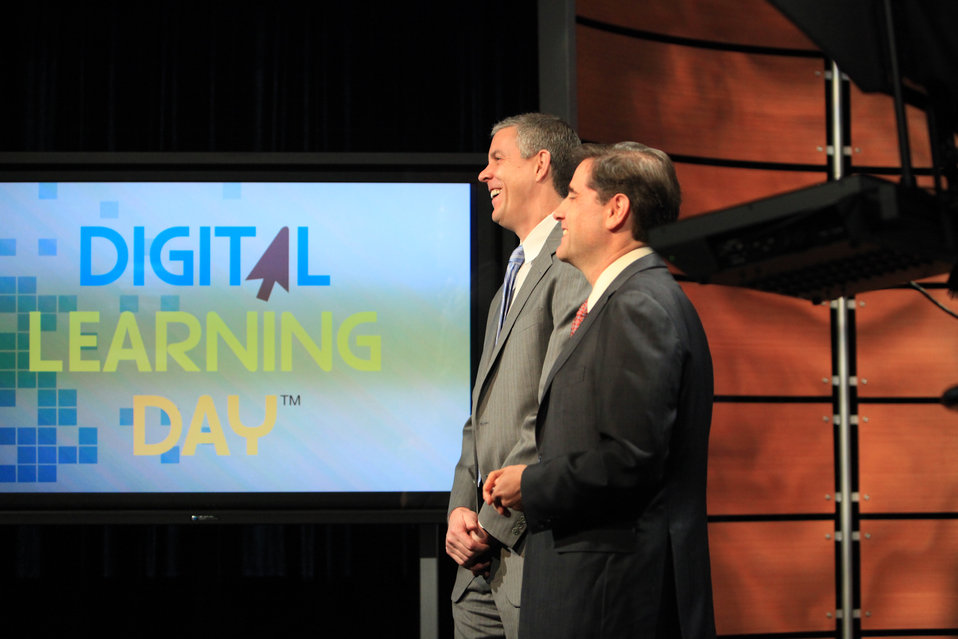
FCC Chairman Genachowski at the Digital Learning Day Town Hall

FCC Chairman Genachowski and the U.S. Department of Education Secretary Arne Duncan on set in the first-ever Digital Learning Day Town Hall in Washington, DC, on February 1, 2012.